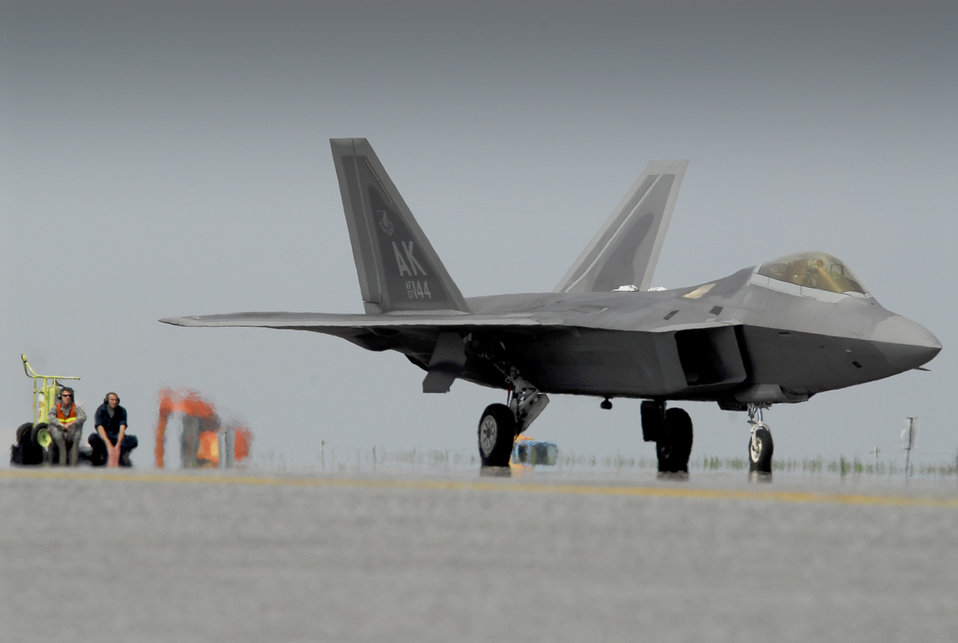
Airmen deploy to Kadena

Airmen watch as an F-22 Raptor taxis toward a refueling station March 31, 2011, on the flightline at Kadena Air Base, Japan. The pilots and maintainers, along with the F-22s, are assigned to the 525th Expeditionary Fighter Squadron at Joint Base Elmendorf-Richardson, Alaska. They deployed to Kadena AB earlier in 2011 to test their capabilities in a new environment and to train with Airmen and aircraft there.